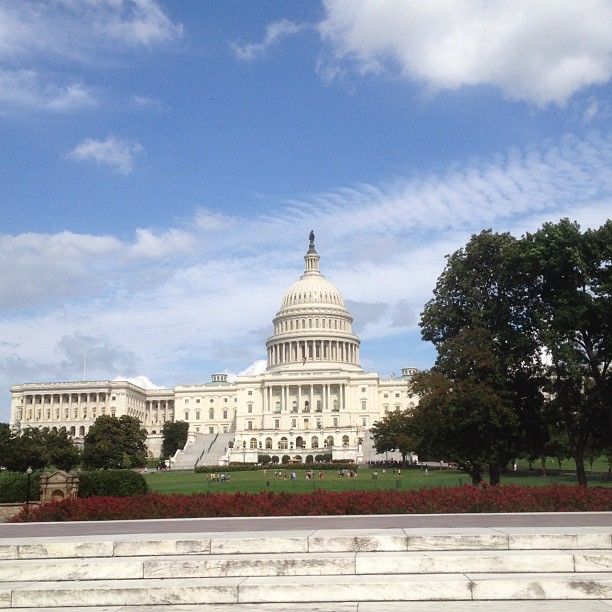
Nice Friday August afternoon at the Capitol.